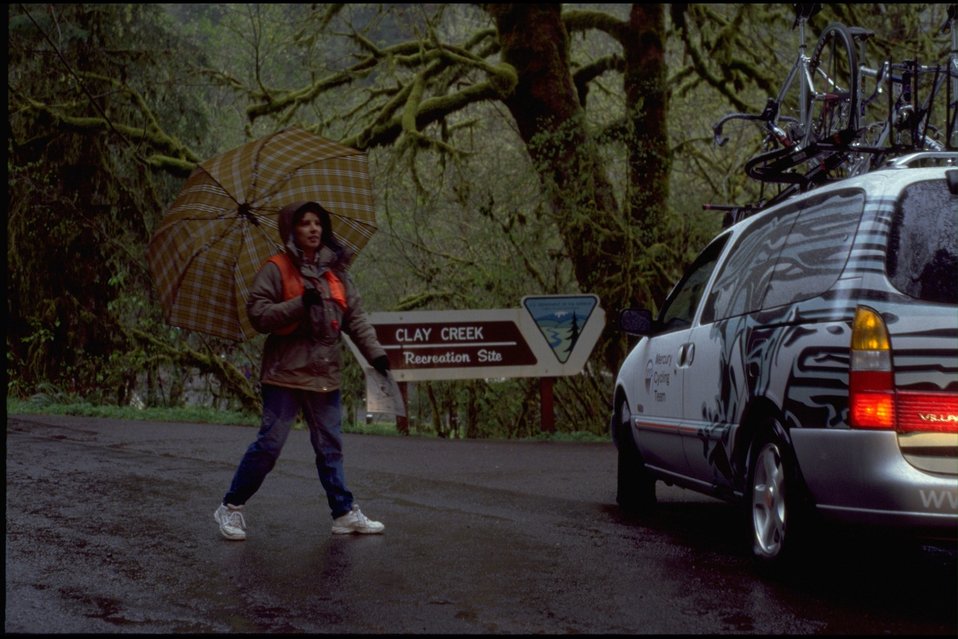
Tour of Willamette.